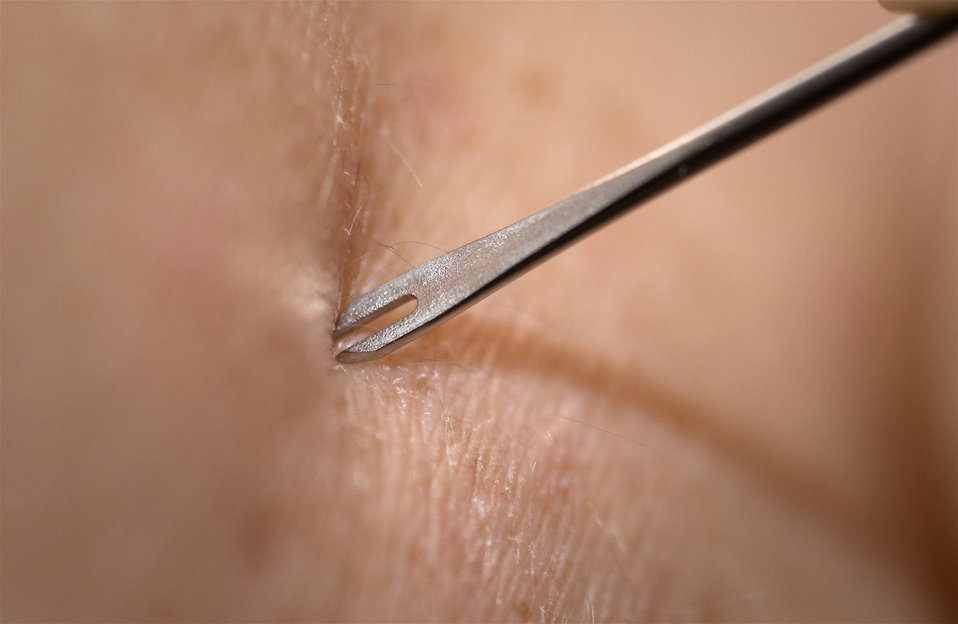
CDC Clinician demonstrates the use of a bifurcated needle during the 2002 Smallpox Vaccinator Workshop.